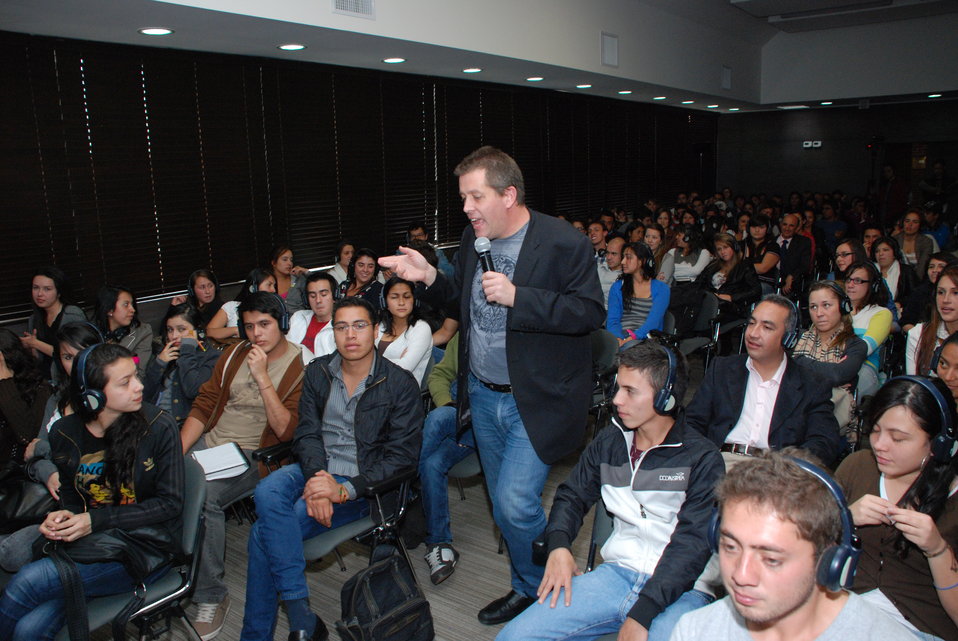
Peter Shankman Participates in Social Media Week in Bogota, Colombia

Peter Shankman, Founder of Help a Reporter Out, discusses his experience incorporating social media into marketing campaigns during Social Media Week (@SMW), hosted by the U.S. Embassy in Bogota, Colombia, at Javeriana University in Bogota, Colombia, on September 20, 2011.